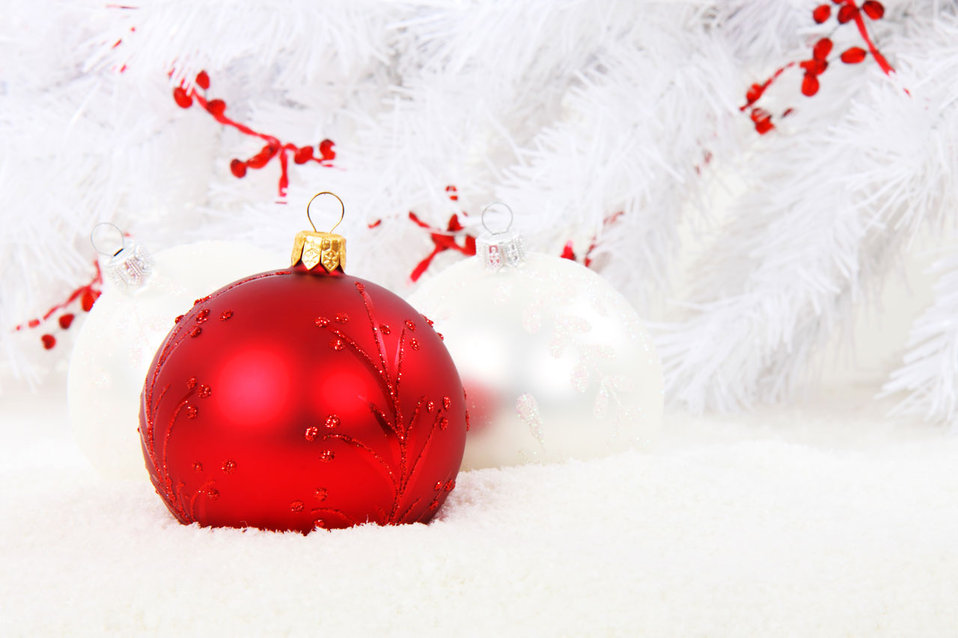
Red bauble with white balls

Red christmas bauble with white christmas balls and white tree in the background.